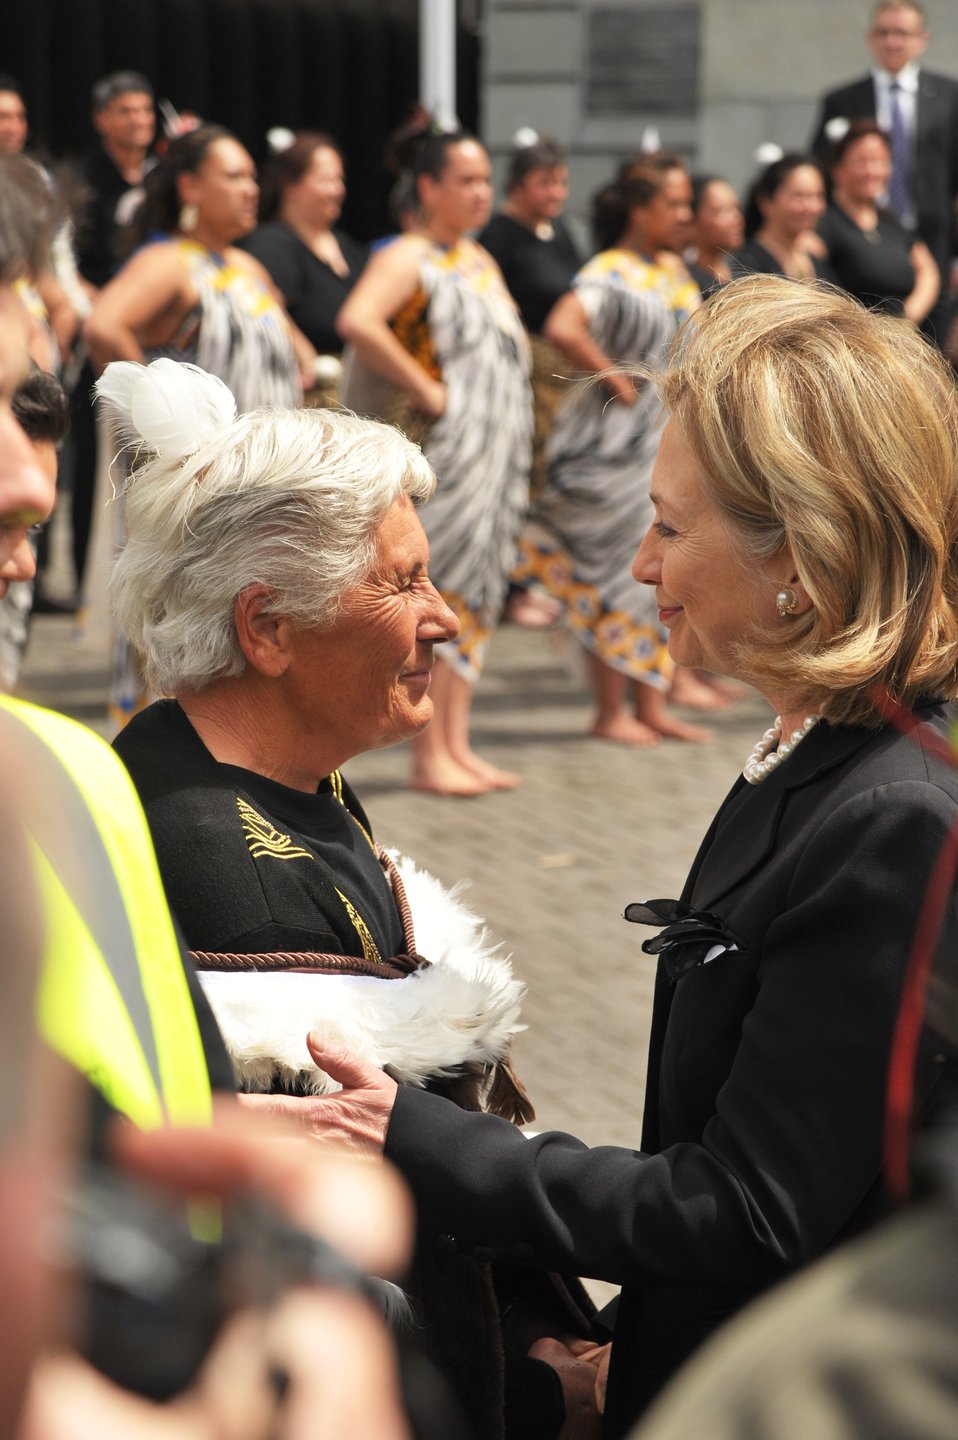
Secretary Clinton Speaks With a Member of the “Iwi Kaumatua”

U.S. Secretary of State Hillary Rodham Clinton speaks with a member of “Iwi Kaumatua,' tribal elders of the local region, on the Parliament forecourt in Wellington, New Zealand, on November 4, 2010.